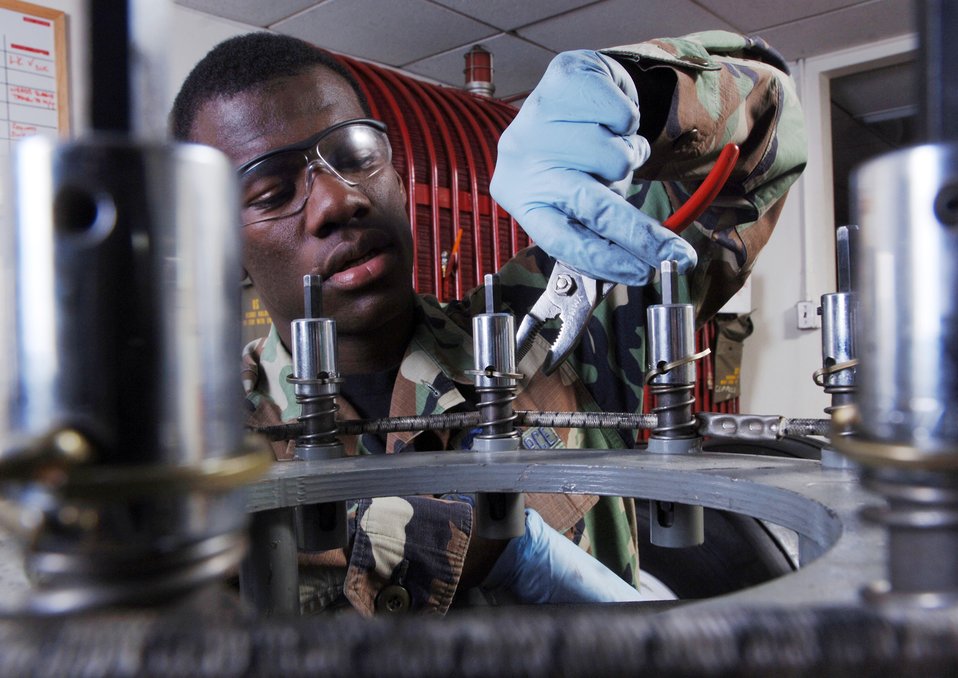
Preventive maintenance

YOKOTA AIR BASE, Japan (AFPN) -- Senior Airman William Jackson removes a defective cotter pin from an adaptor housing of a C-130 Hercules nose landing gear here. He is an aero repair technician with the 374th Maintenance Squadron.